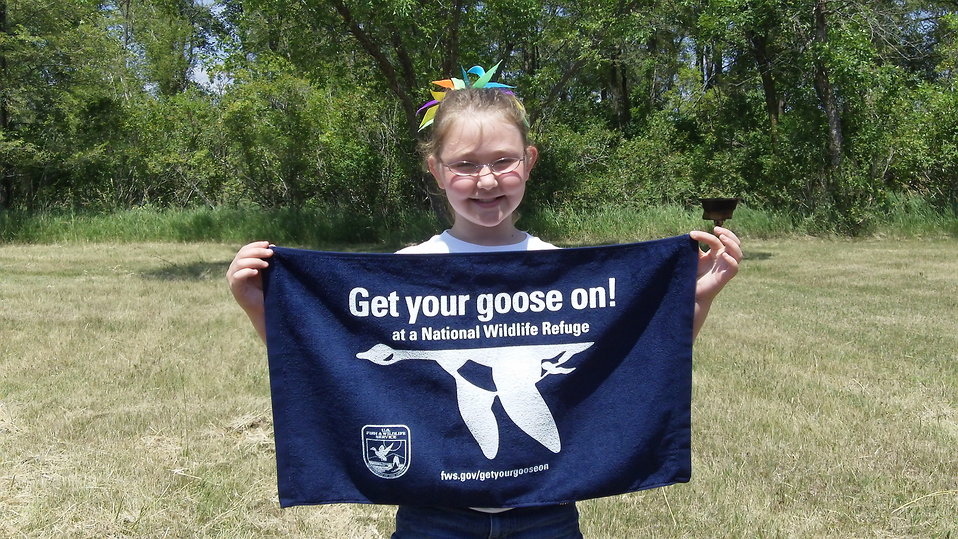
Get Your Goose On!

Photo taken at Huron Wetland Management District in east-central South Dakota.